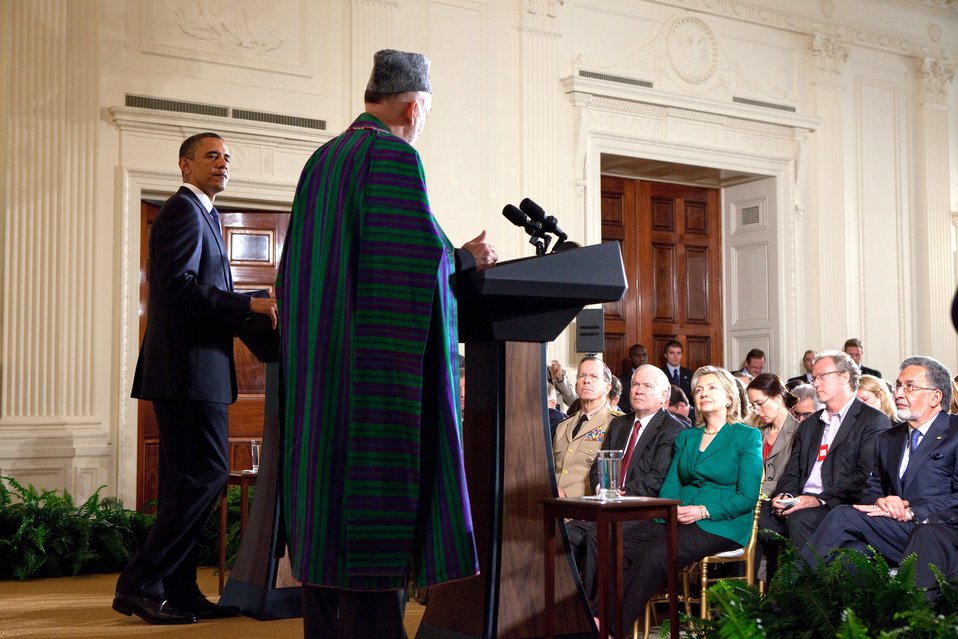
Afghan President Karzai Delivers Remarks

President Barack Obama and President Hamid Karzai of Afghanistan hold a joint press conference in the East Room of the White House in Washington, D.C., May 12, 2010.